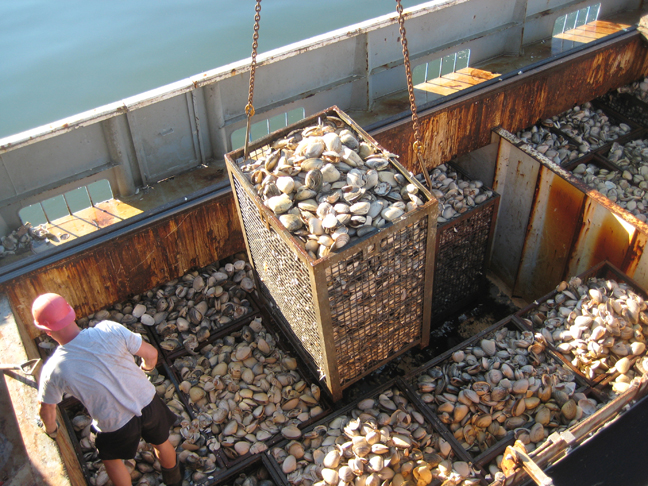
Clam Harvest: Testing at Sea

Clams taken from Georges Bank are stored in individual cages. Clams from each section are sampled for safety by FDA-trained fishermen out at sea, and again by state officials when they reach land.

Fishermen trained by FDA scientists are performing sophisticated lab tests on clams while far out to sea -- a novel approach that has allowed the reopening of thousands of miles of ocean to clamming off the coast of New England. Read the FDA Consumer Update to learn more:

• Novel Program Restarts Clam Harvest